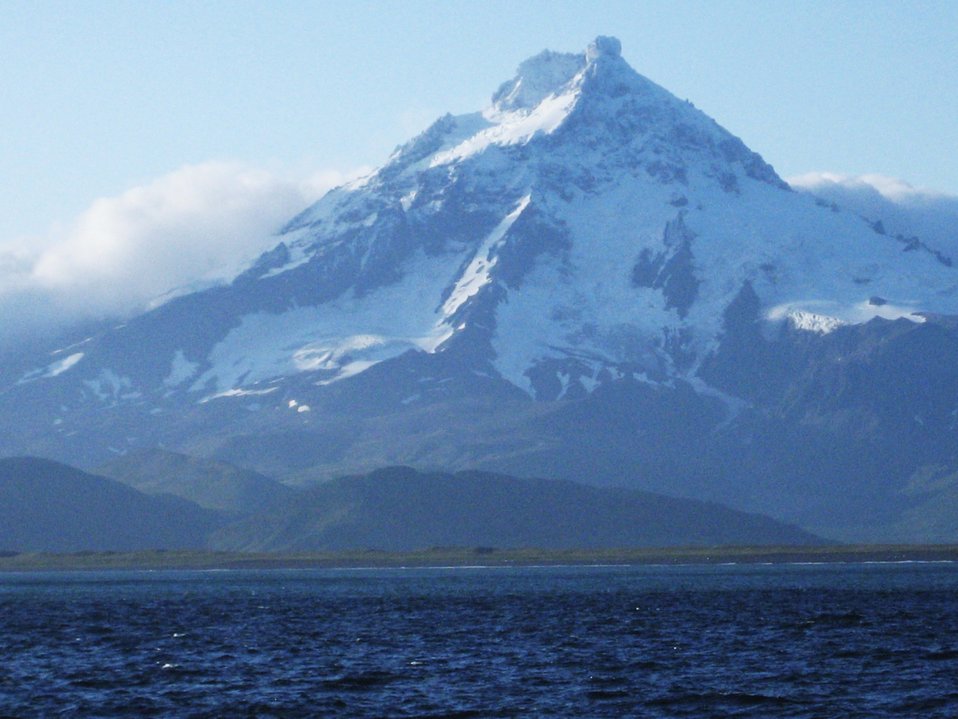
Isanotski Volcano or 'Ragged Jack' on the eastern end of Unimak Island.